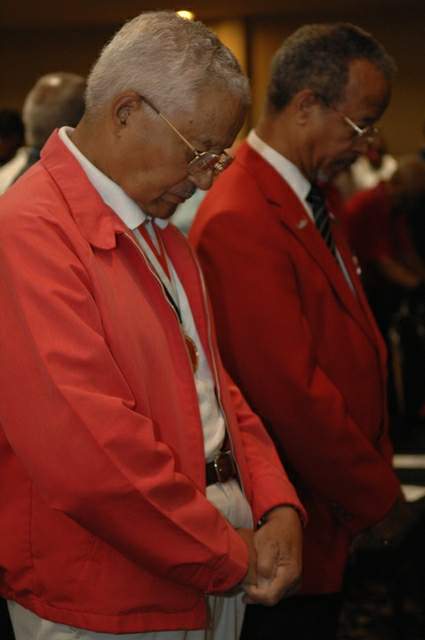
Lonely Eagles ceremony recognizes fallen Tuskegee Airmen

Original Tuskegee Airman and retired Col. Charles McGhee (left) bows his head in prayer next to retired Lt. Gen. Russell C. Davis during the Lonely Eagles Ceremony at the 38th Annual Tuskegee Airman, Inc. convention Aug. 7 in Las Vegas. Colonel McGhee joined the Army in 1942 and is a veteran of World War II, the Korean War and Vietnam. He flew 409 combat missions during his time in the Air Force and was formerly TAI's national president. General Davis is the Tuskegee Airman, Inc., national president. TAI is a non-profit organization dedicated to honoring the accomplishments of the African-American air, ground and operations crew members in the Army Air Corps during World War II.